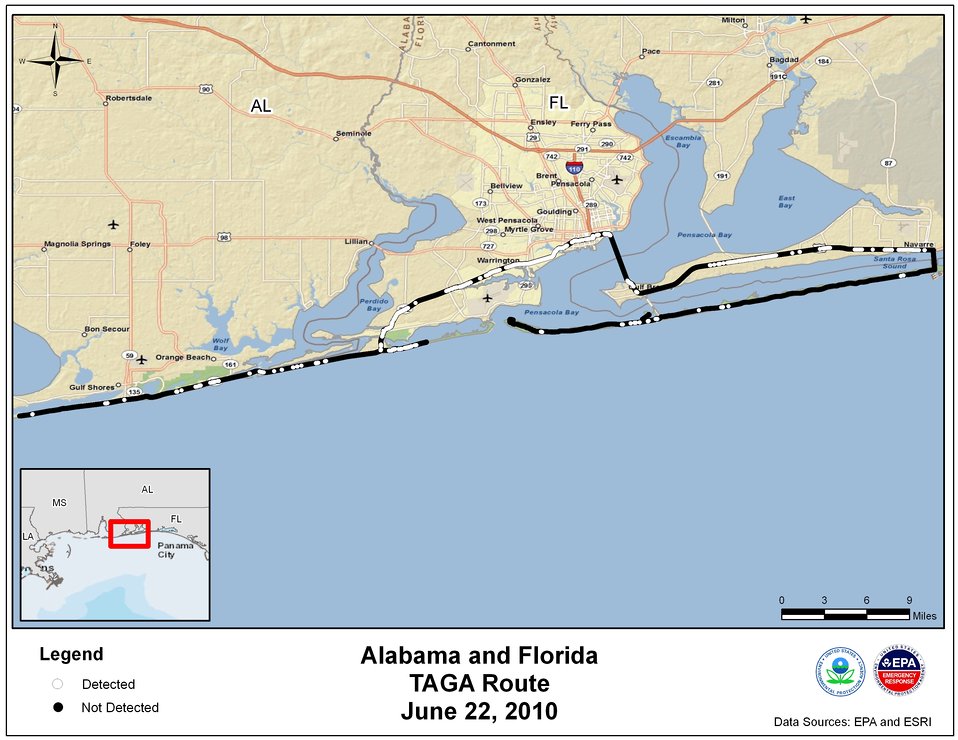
EPA TAGA Air Monitoring Locations June 22, 2010